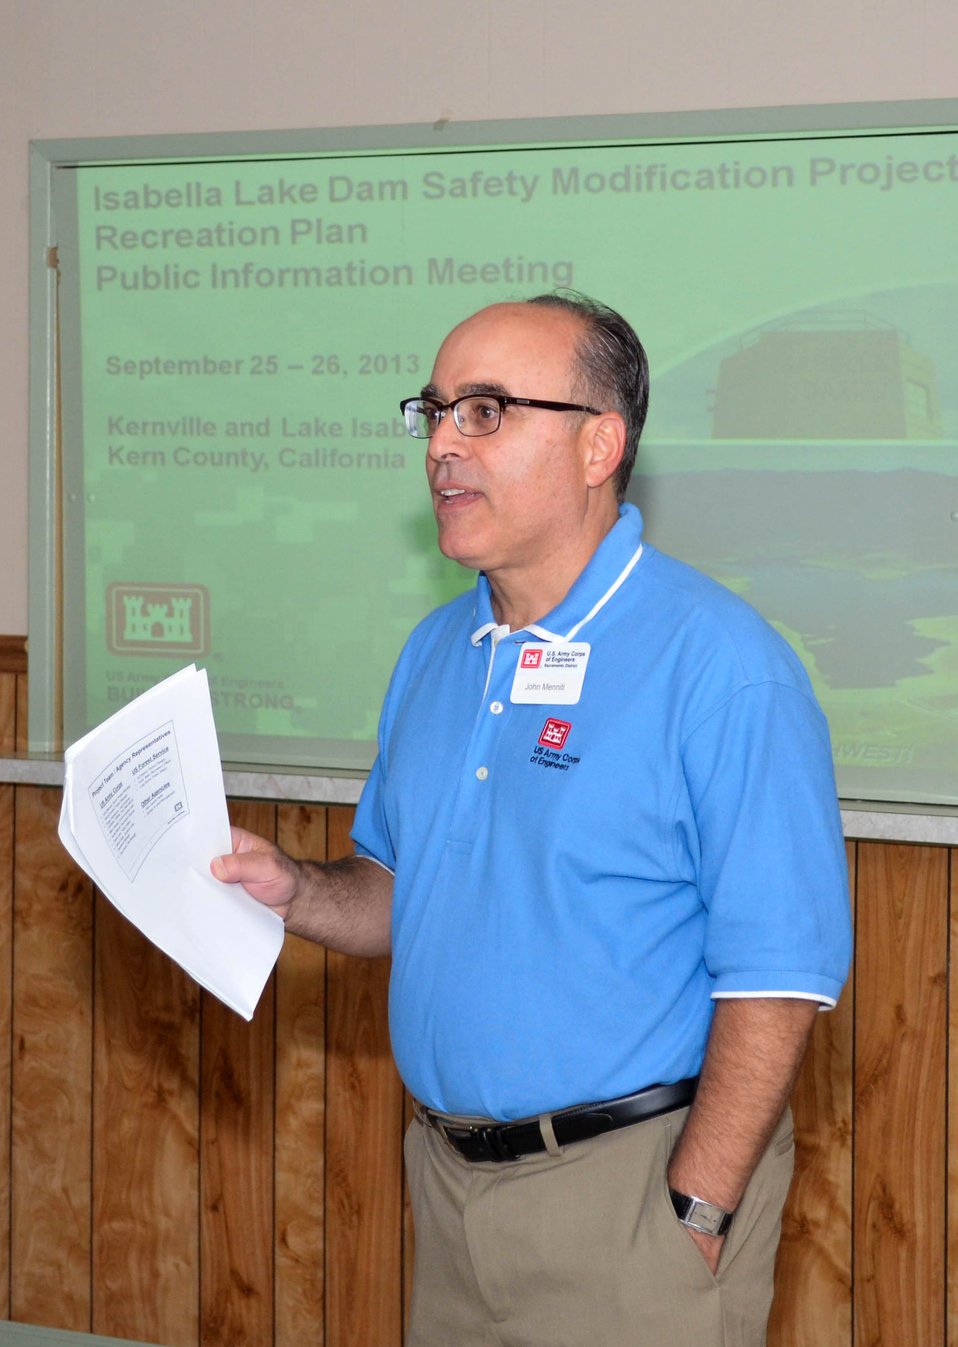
Corps talks recreation with Isabella Lake Dam communities

John Menniti, a senior project manager for the U.S. Army Corps of Engineers Sacramento District, provides an introduction on the Isabella Lake Dam Safety Modification Project during a public meeting Sept. 25, 2013, in Kernville, Calif. The Corps held the public meeting to talk with local residents and business operators about how construction of the dam safety modification project will temporarily impact recreation at the lake, and listen to their ideas for solutions to reduce those impacts. The Corps will release their findings in a draft recreation plan, which is scheduled for release in December 2013.